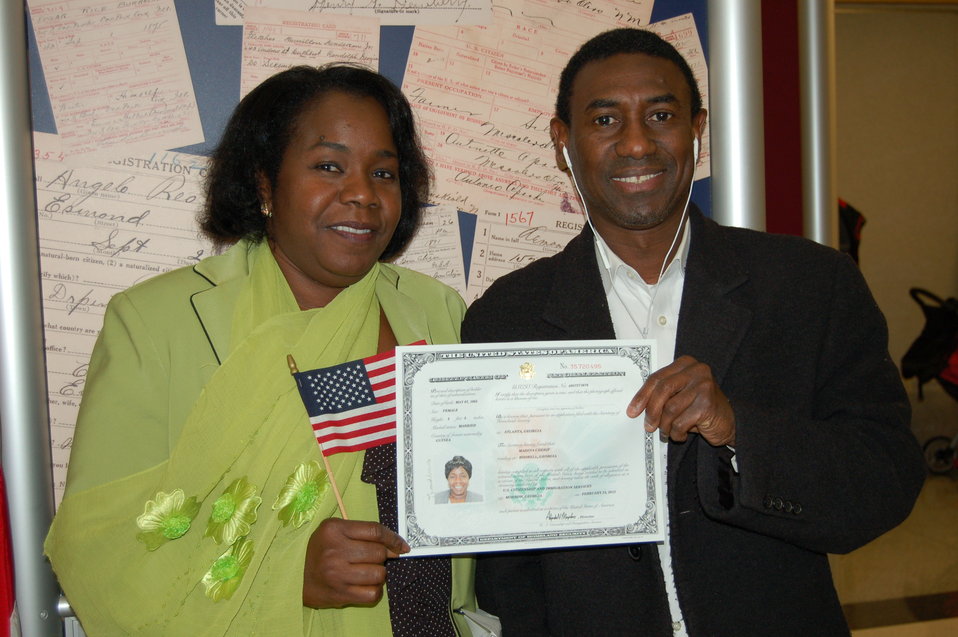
New Citizens